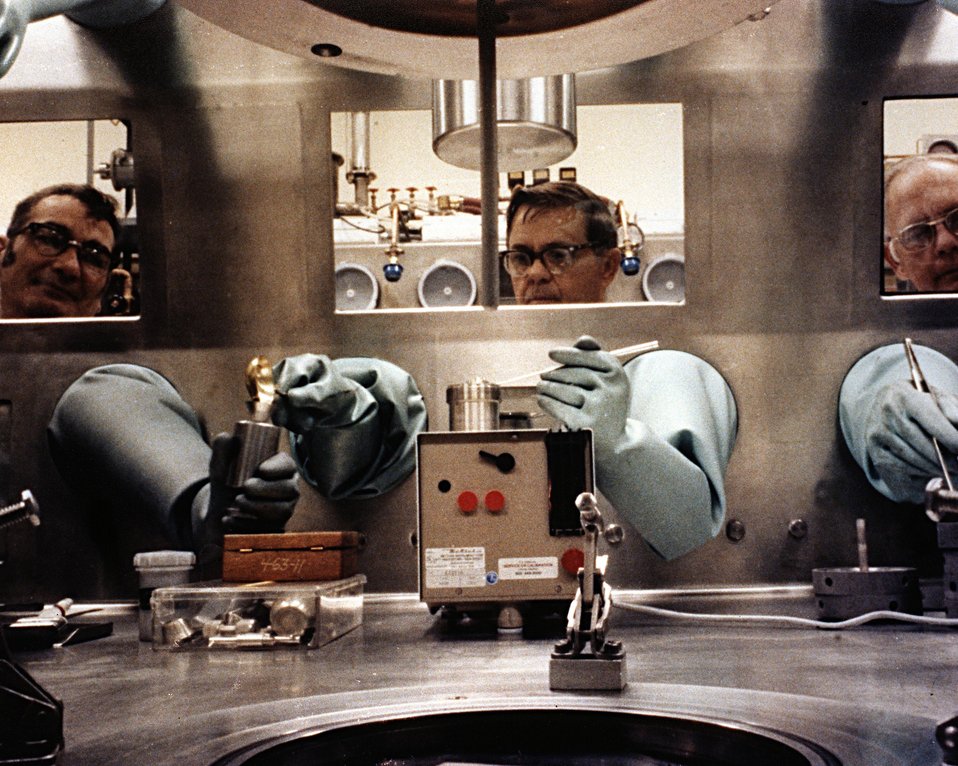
VIEW ACROSS OPEN, HIGH TEMPERATURE, VACUUM/INERT-GAS FURNACE.

THREE TECHNICIANS ARE IN THE PROCESS OF HAND-PRESSING ADVANCED LMFBR CARBIDE FUEL PELLETS. THE CENTER TECHNICIAN WEIGHS POWDER CHARGES, THEN POURS THE CHARGE INTO A PRE- PARED DIE (AS WITH TECHNICIAN AT LEFT). AT THE SAME TIME, THE THIRD TECHNICIAN IS IN THE PROCESS OF PRESSING A PELLET,THEN CLEARING AND LUBRICATING (SEE RIGHT) THE DIE.